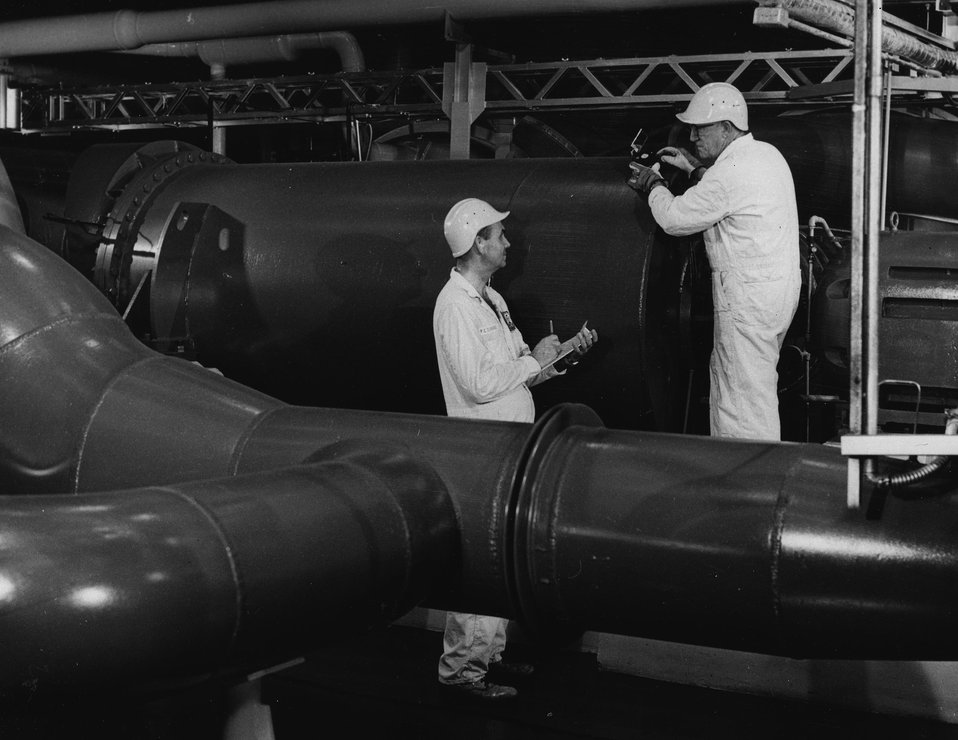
Miles and miles of piping and other equipment fill the Energy Research and Development Administration's Gaseous Diffusion Plant at Oak Ridge, Tennessee. The Plant, which covers 600 acres, produces enriched uranium-235. c. 1971